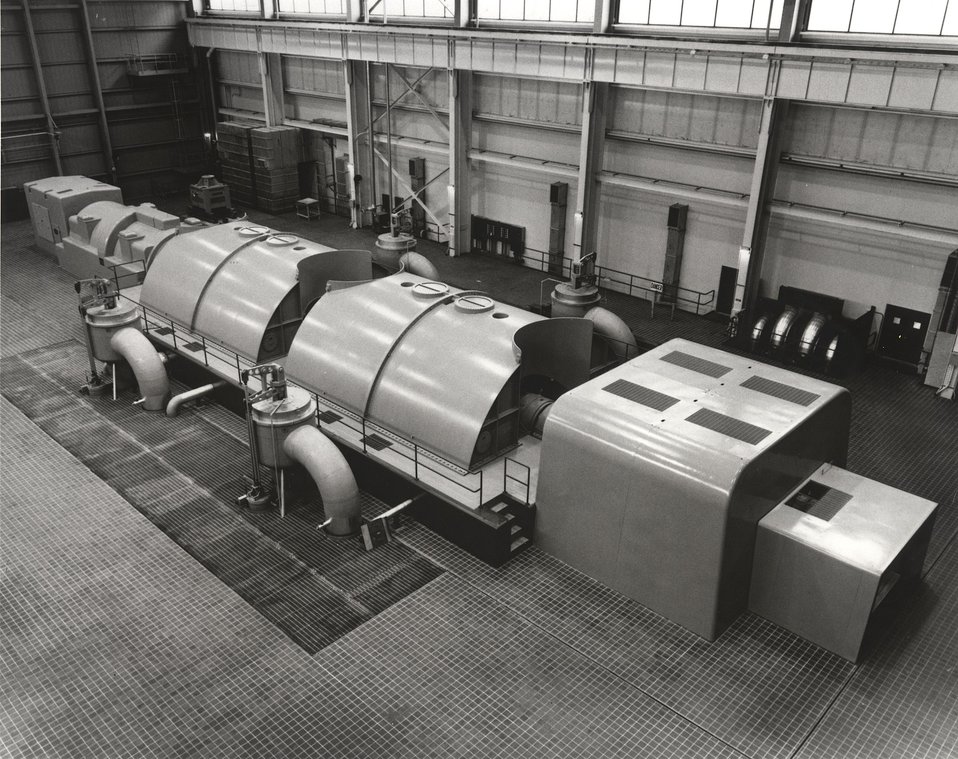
Fort Calhoun Station Unit No. 1 turbine generator. Circa 1974.